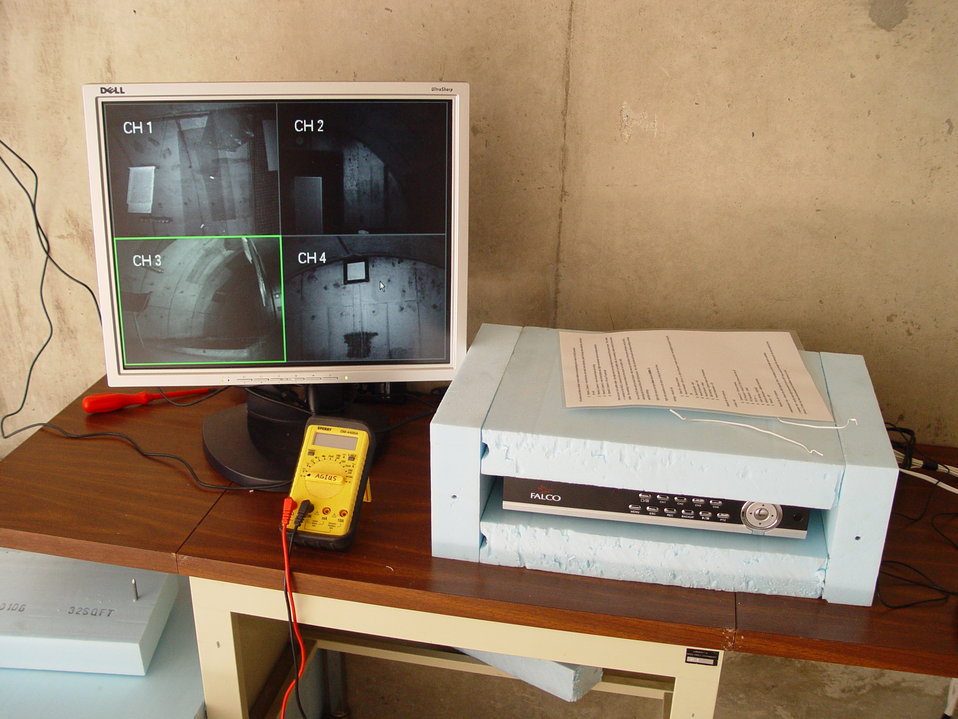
DVR recorder and live feed monitor of bunker interior